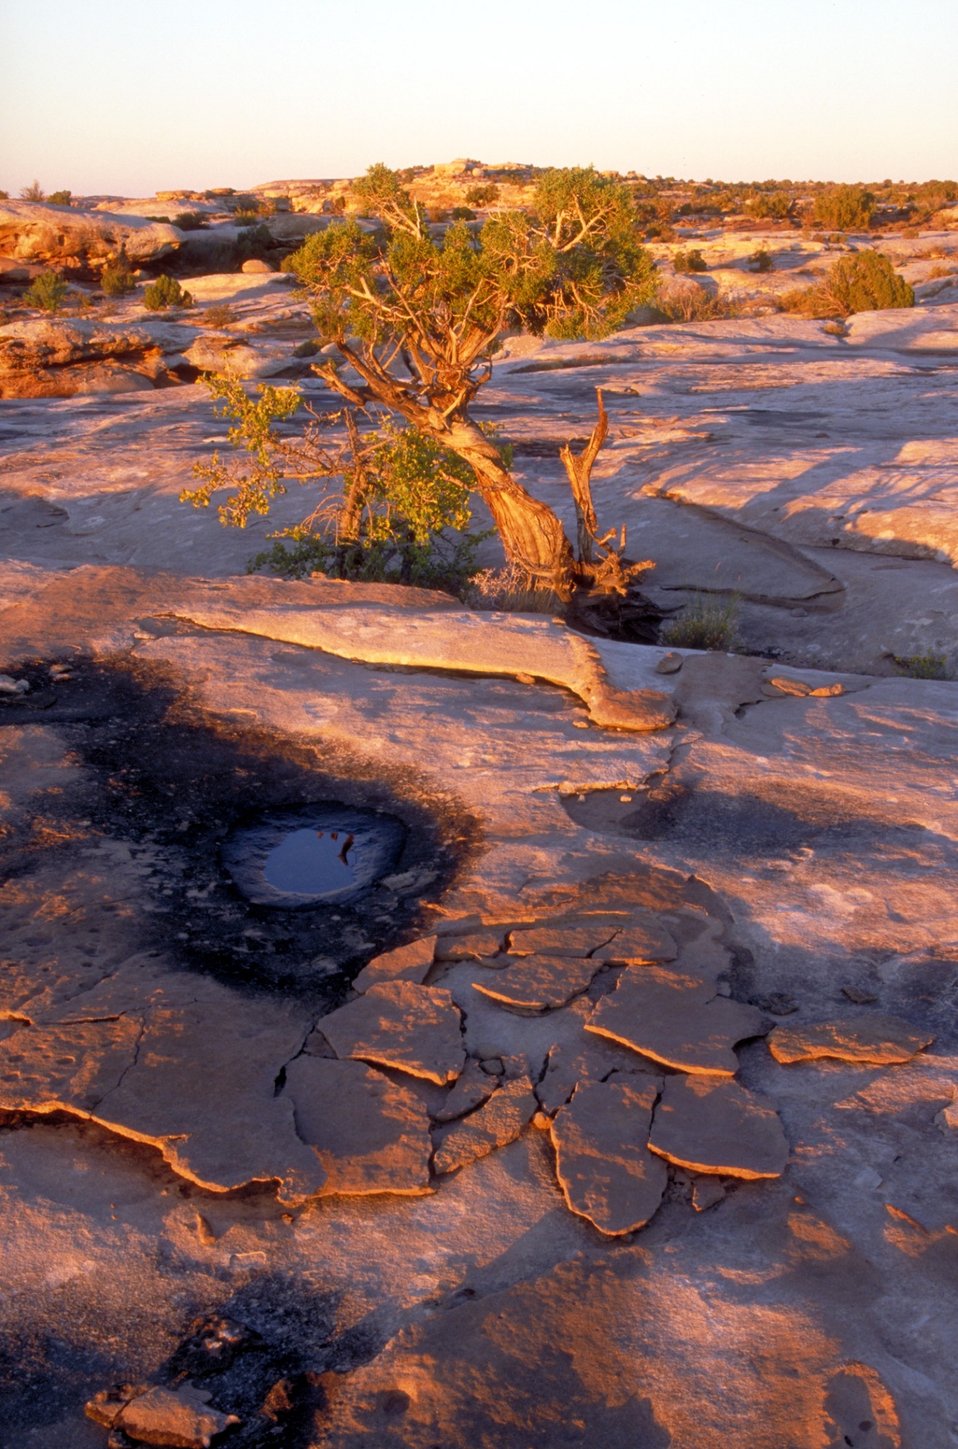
Slickrock and juniper at Spring Canyon Point area near the Green River.